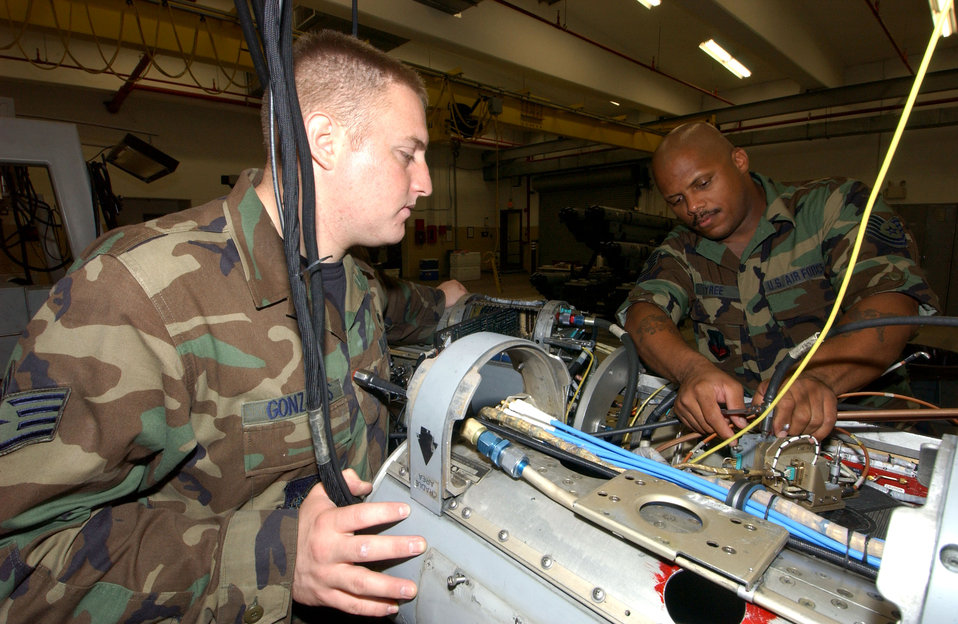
Troubleshooters

Staff Sgt. Hector Gonzales (left) works with Tech. Sgt. Edward Tyree on an electronic warfare pod at Kunsan Air Base, South Korea, on Thursday, July 6. Sergeant Gonzales is with Kunsan's 8th Maintenance Squadron. Sergeant Gonzales is with the New Mexico Air National Guard's 150th Fighter Wing.